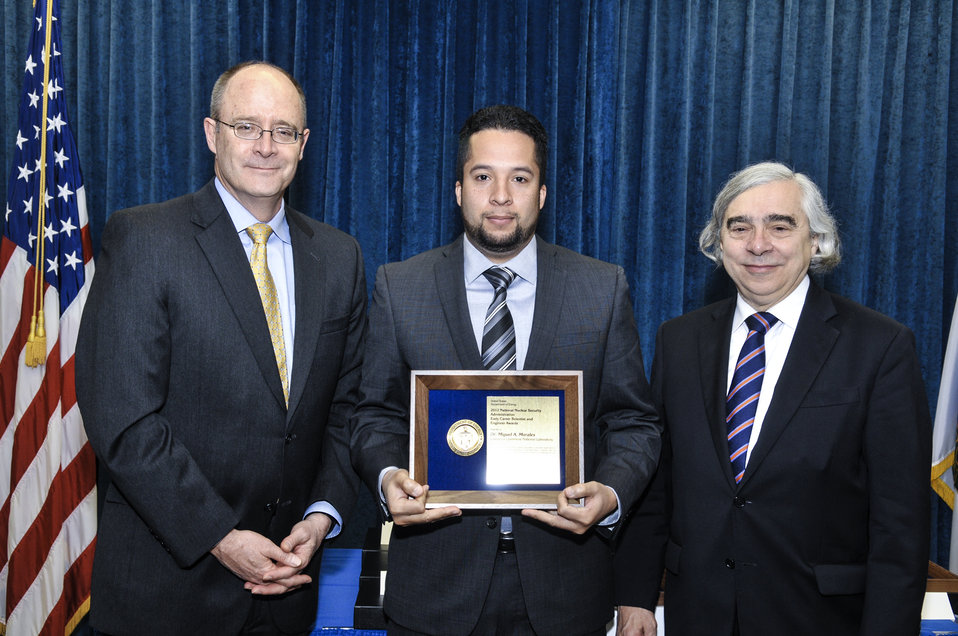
PECASE Awards: DOE Secretary E. Moniz with DOE Acting Administrator and Acting Undersecretary for Nuclear Security Bruce Held on April 14, 2014